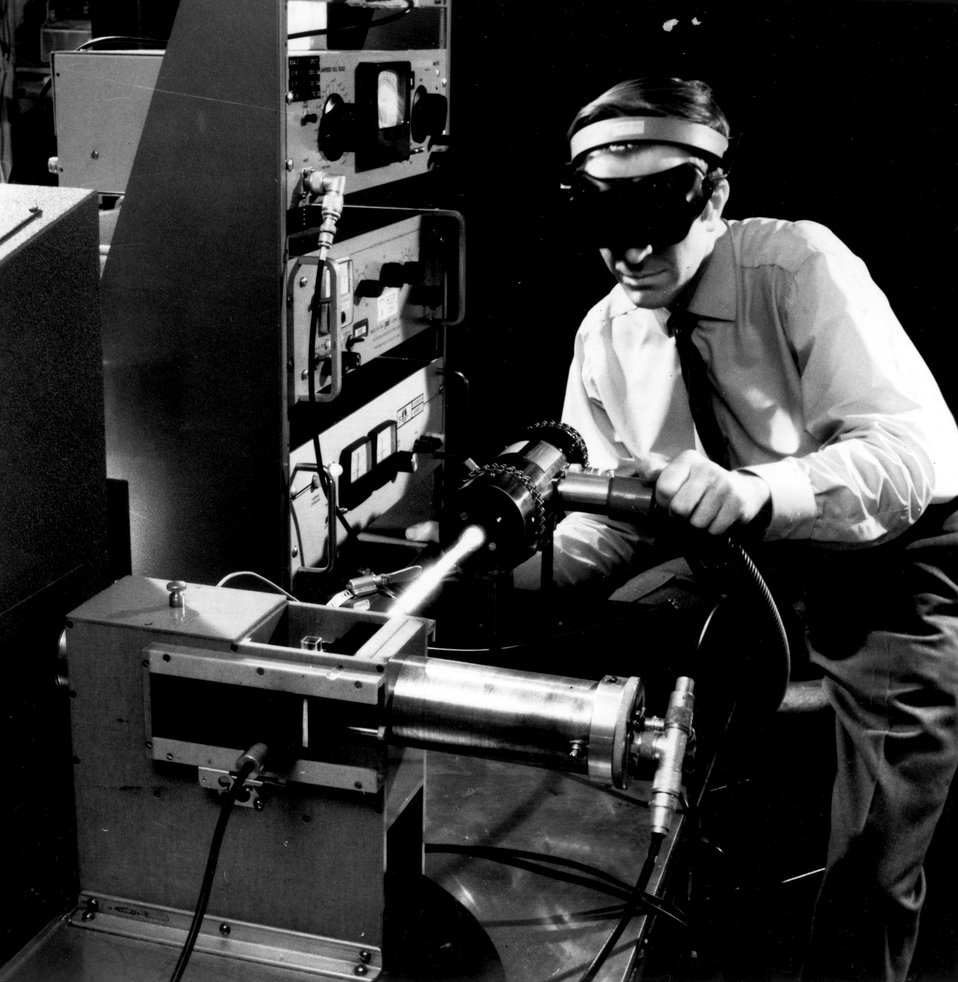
Ever-broadening uses of laser beams were enhanced during 1969 when a more definitive and less restrictive classification on laser information was adopted. c. 1970